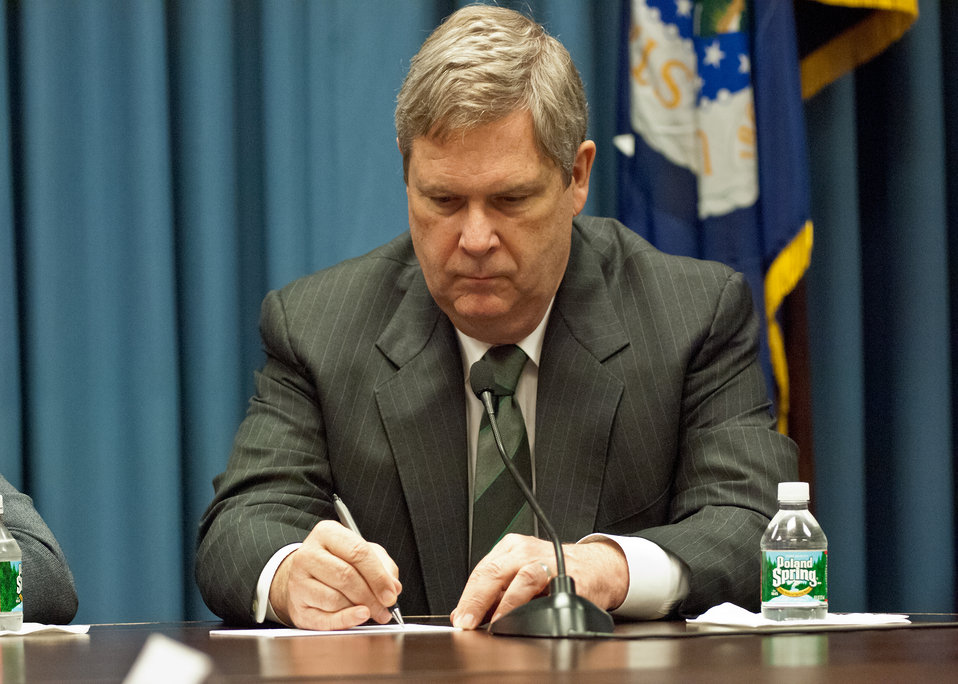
Agriculture Secretary Tom Vilsack takes notes during a meeting of commodity groups representing all aspects of agriculture. Secretary Vilsack and Lisa Jackson, Administrator, Environmental Protection Agency met with the commodity groups at the United States Department of Agriculture, in Washington, D.C., to discuss mutual agricultural and environmental issues on Tuesday, December 14, 2011.